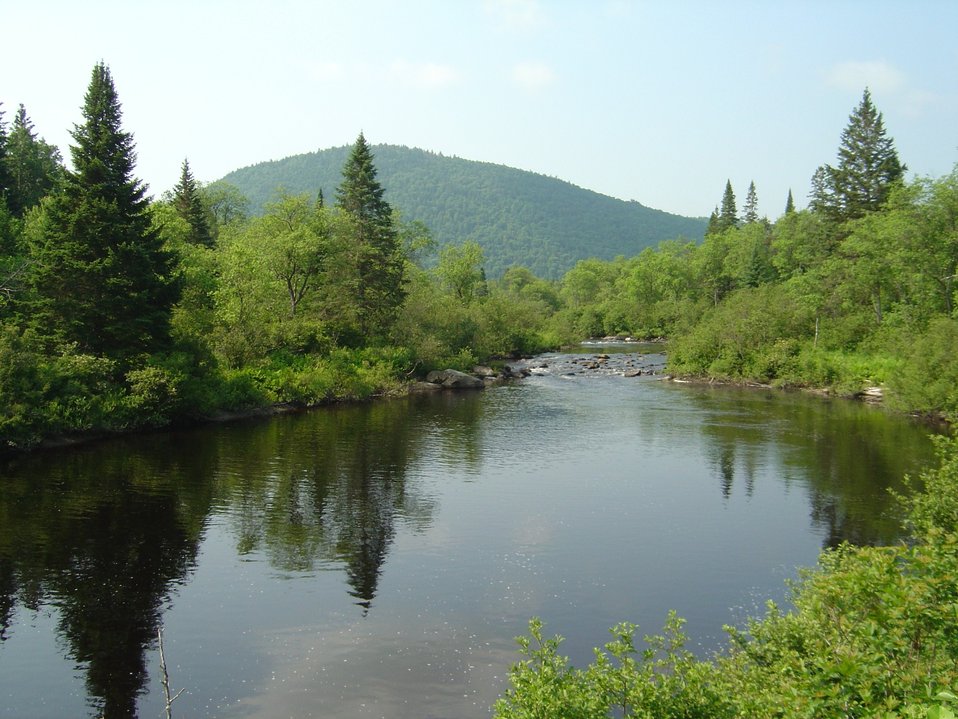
Nulhegan River

Nulhegan Basin Division, Silvio O. Conte National Wildlife Refuge.